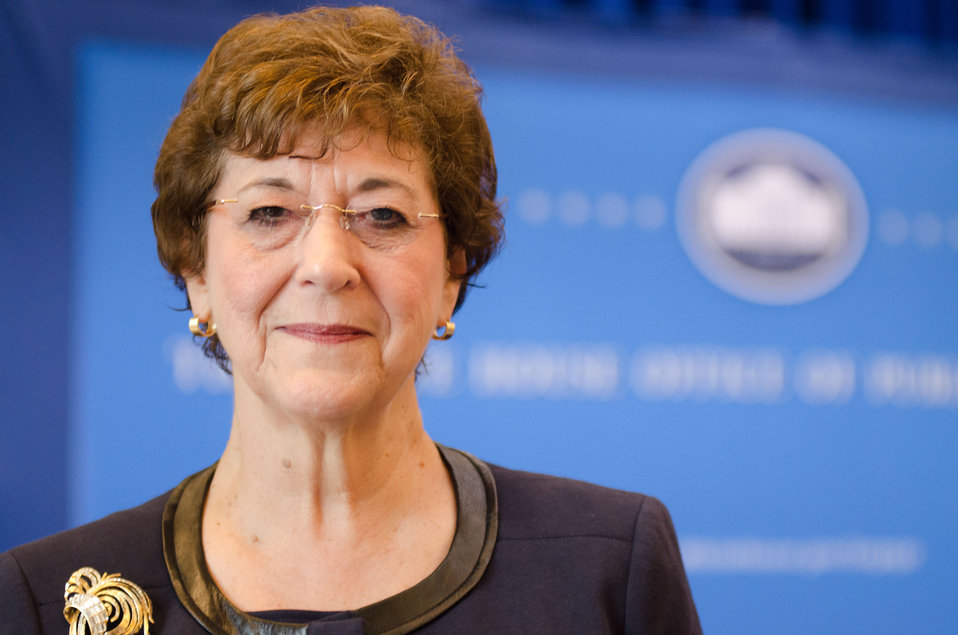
Auburn University (Alabama) College of Human Sciences Dean Dr. June Henton is one of eleven honorees recognized for their efforts to reduce hunger and increase food security in the U.S. and internationally at the White House Champions of Change Strengthening Food Security at Home and Abroad Event held at the White House on Thursday, September 6, 2012.